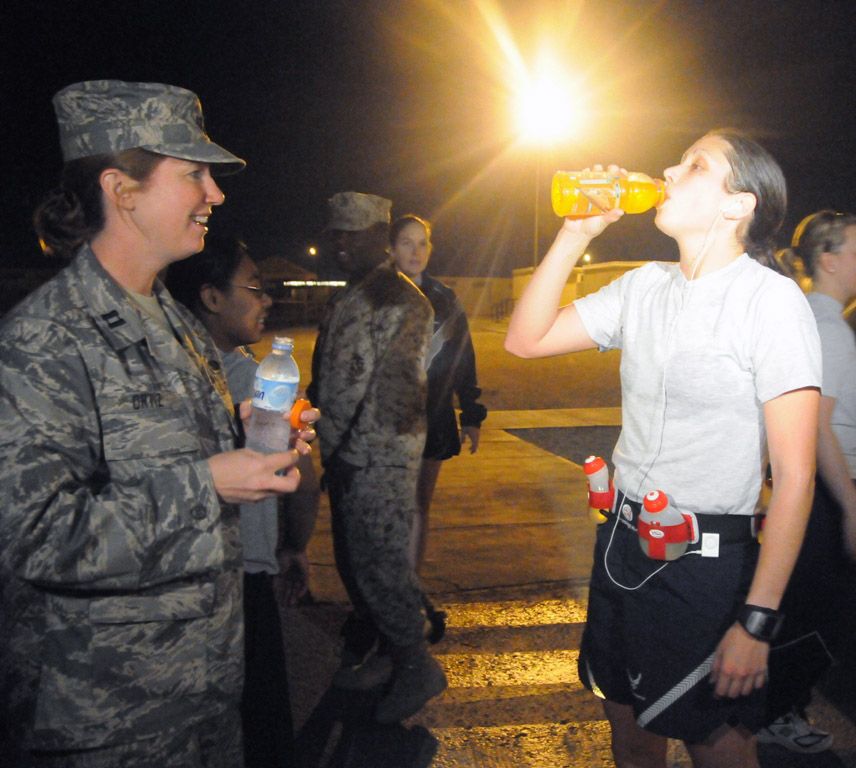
Mother daughter race together

Capt. Meredith Ortiz provides 1st Lt. Jessica Lopez with a sports drink at the completion of the 26.2 mile run. As the event coordinator, Captain Ortiz enlisted the help of several volunteers to help plan and execute the marathon and 5K in just two weeks.